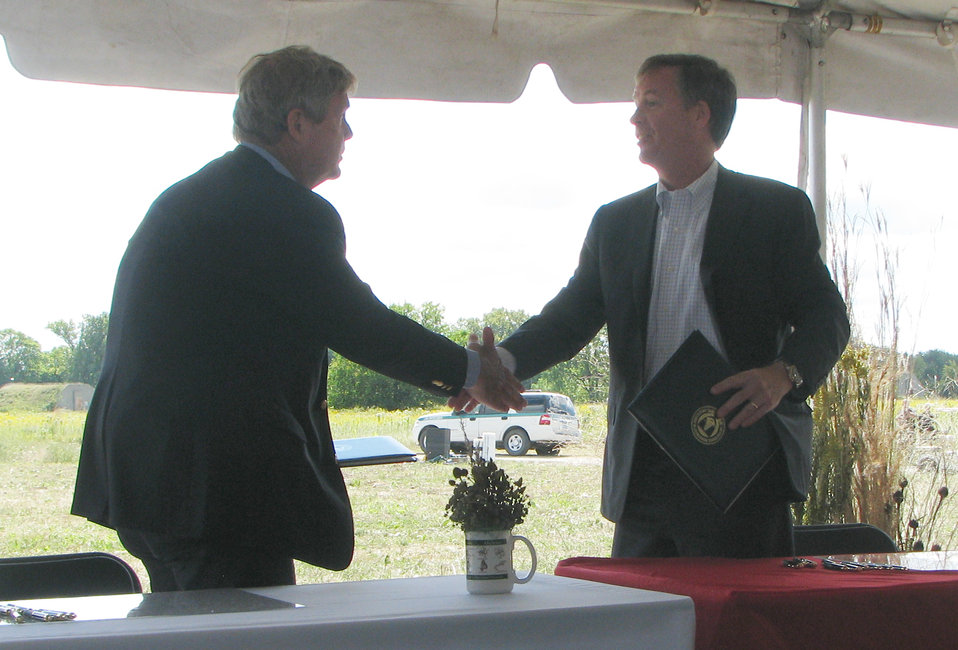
Agriculture Secretary Tom Vilsack and Coca-Cola Americas President Steve Cahillane shake hands after signing a public-private partnership to restore and protect damaged watersheds on national lands at the Midewin Tallgrass Prairie in Illinois on Friday, Sep. 13, 2013. The goal of this partnership is to return more than a billion liters of water to the National Forest System that provides drinking water to more than 60 million Americans.